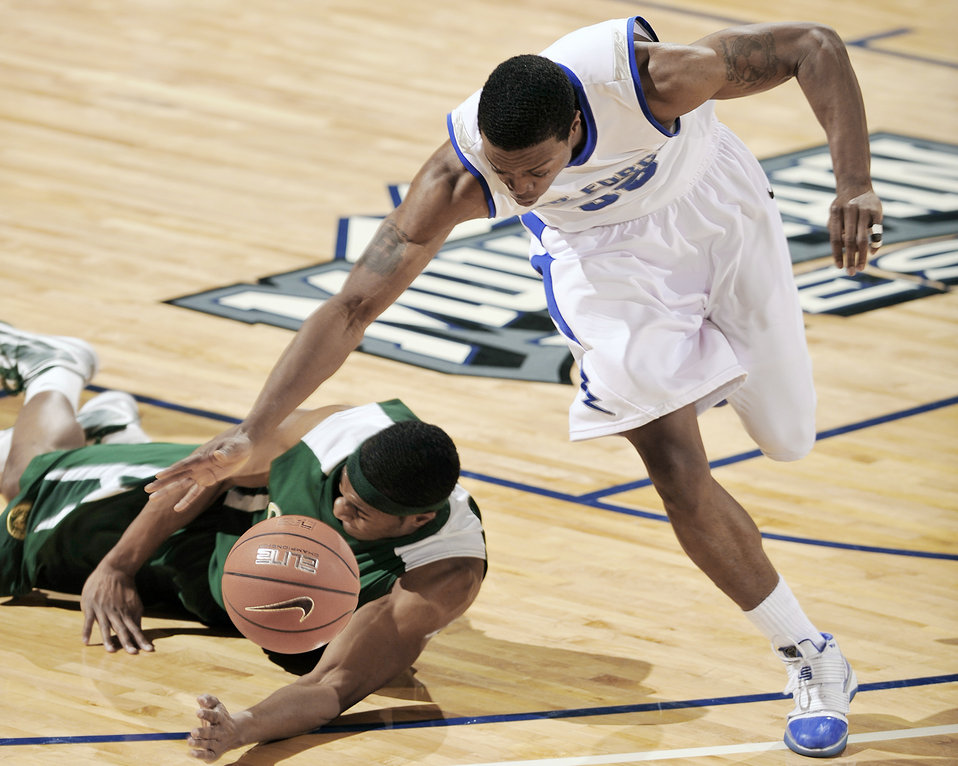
Colorado State beat Falcons

Air Force Academy junior guard Evan Washington steals the ball as Colorado State beat Air Force 51-47 at Clune Arena Feb. 9, 2010. The Falcons are 9-14 overall and 1-9 in the Mountain West Conference.